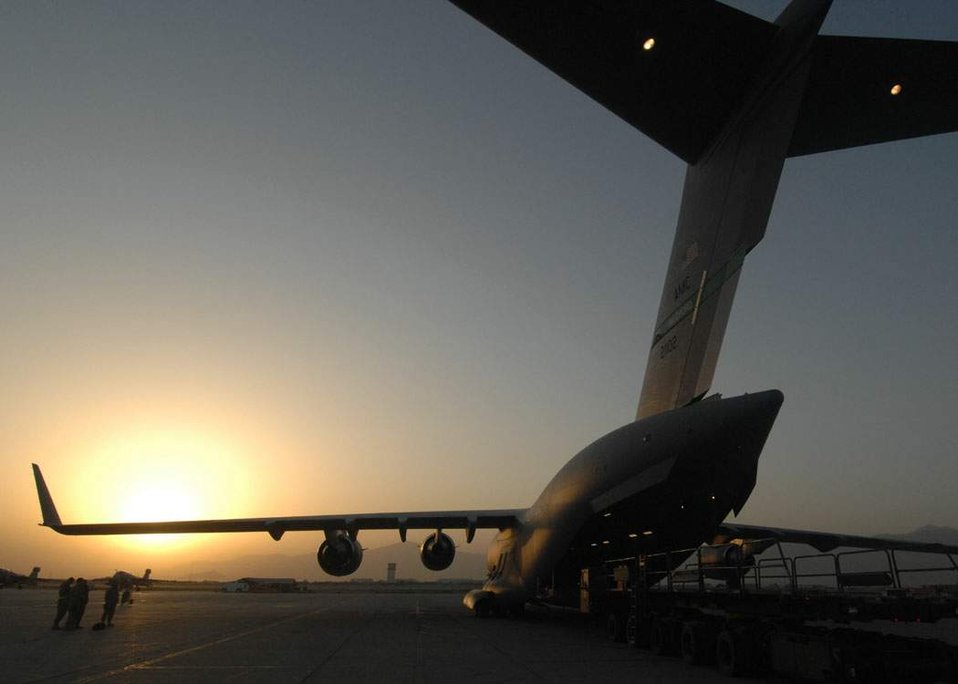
Oct. 20 airpower summary: C-17s support warfighters

A C-17 Globemaster III is loaded for an airdrop at Bagram Air Base, Afghanistan. C-17s play a key role in the delivery of winter supplies to forward-operating bases that road conditions and security prevent convoys from reaching safely.